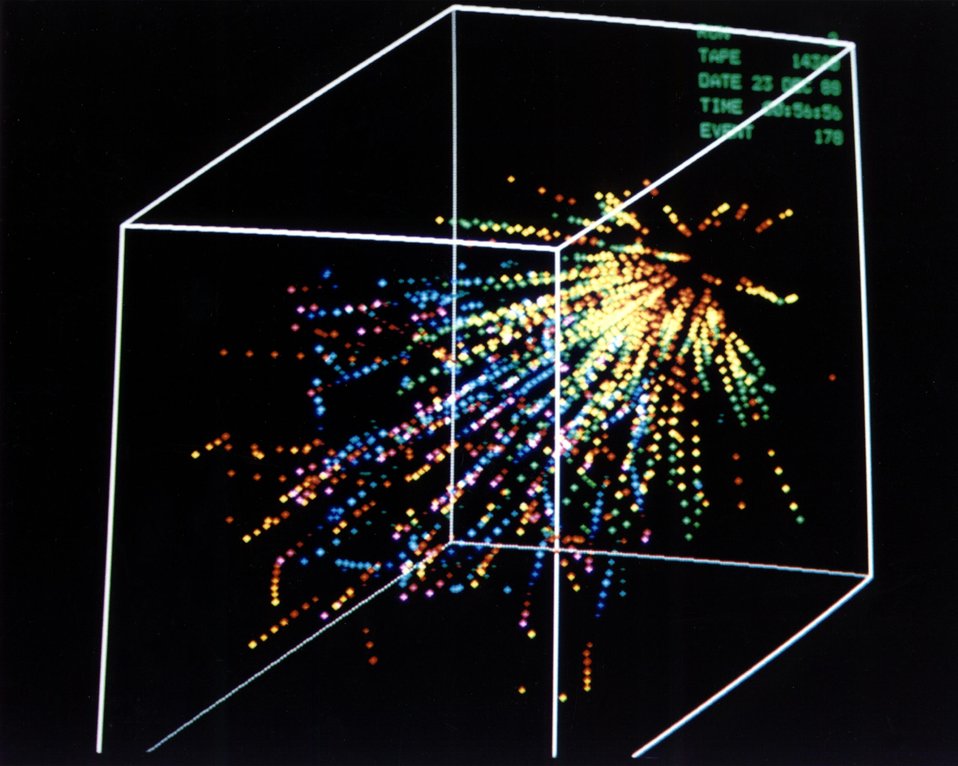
A COMPUTER RECONSTRUCTION OF THE PARTICLES PRODUCE IN A COLLISION OF A SINGLE, HIGH ENERGY SILICON ION WITH A GOLD NUCLEUS.

IN THE EXPERIMENT, COLLISIONS TAKE PLACE IN A CUBE-SHAPED DETECTOR CALLED A TIME PROJECTION CHAMBER, WHICH USES TIME TO MEASURE PARTICLE POSITIONS IN ORDER TO TRACE THEIR TRACKS. SINCE A SINGLE COLLISION CAN PRODUCE MORE THAN A HUNDRED PARTICLES, A POWERFUL COMPUTER IS REQUIRED TO KEEP TRACK OF WHERE ALL THE CHARGED PARTICLES GO. COLOR HAS BEEN ADDED TO THE COMPUTER RECONSTRUCTION TO ENHANCE DEPTH PERCEPTION.